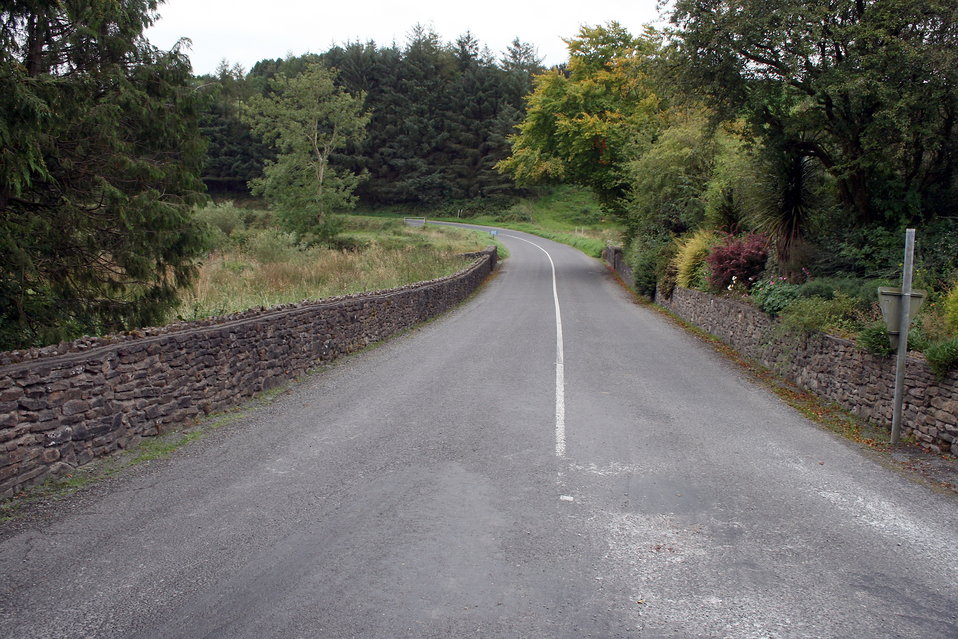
The R479 leaving Milestone, County Tipperary, Ireland